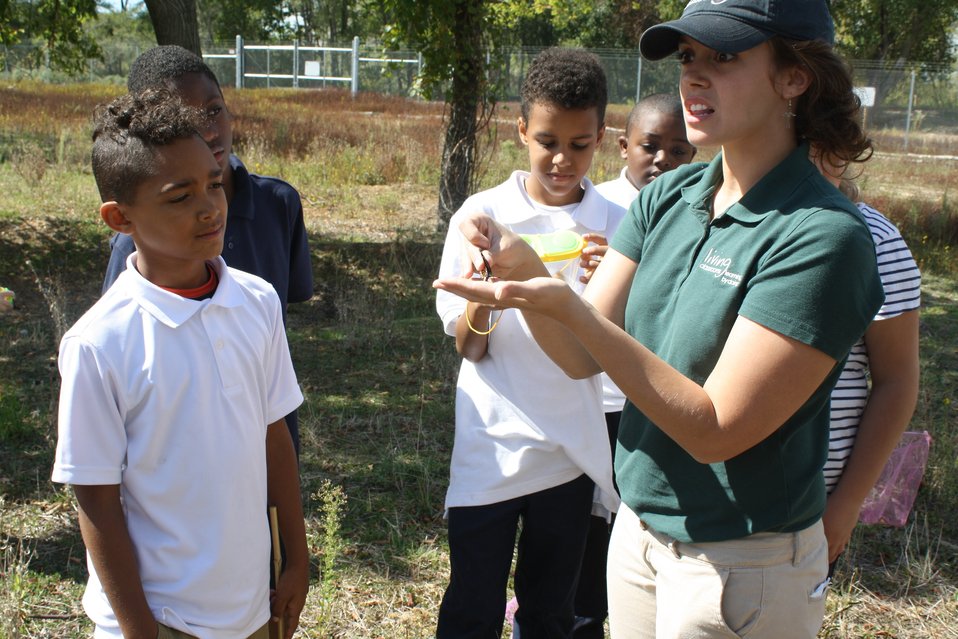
School students

Students at Curtis Bay Elementary School participate in environmental education programs at Masonville Cove led by the Living Classrooms Foundation.